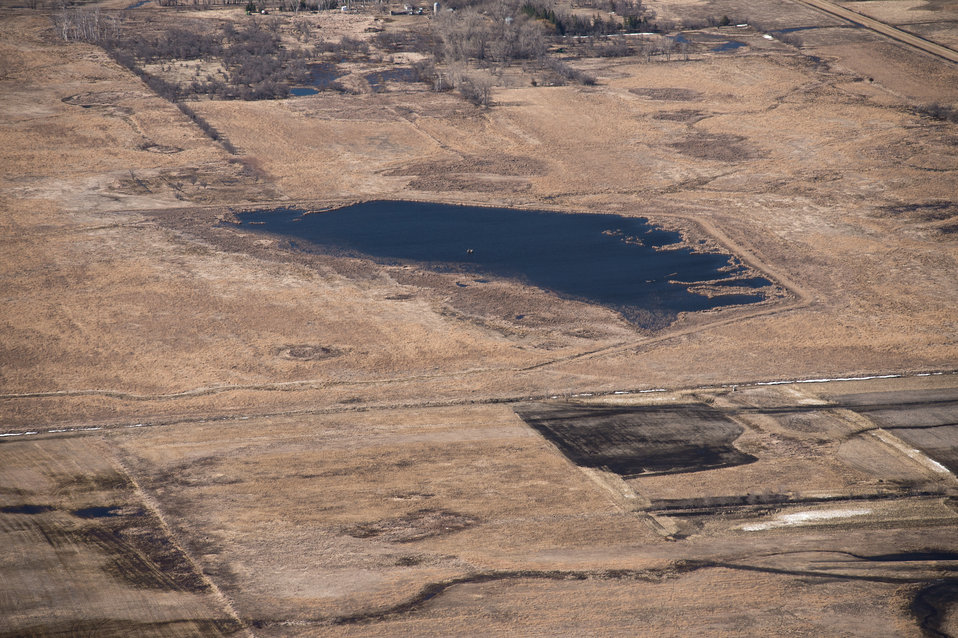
Ehlert North U.S. Department of Agriculture (USDA) Natural Resources Conservation Service (NRCS) Wetland Reserve Program (WRP) in Wilkin County, MN, on Tuesday, April 30, 2013. For information about this and other programs from the USDA Red River Basin Initiative (RRBI) please see www.mn.nrcs.usda.gov/news/features13/RRBI.html.